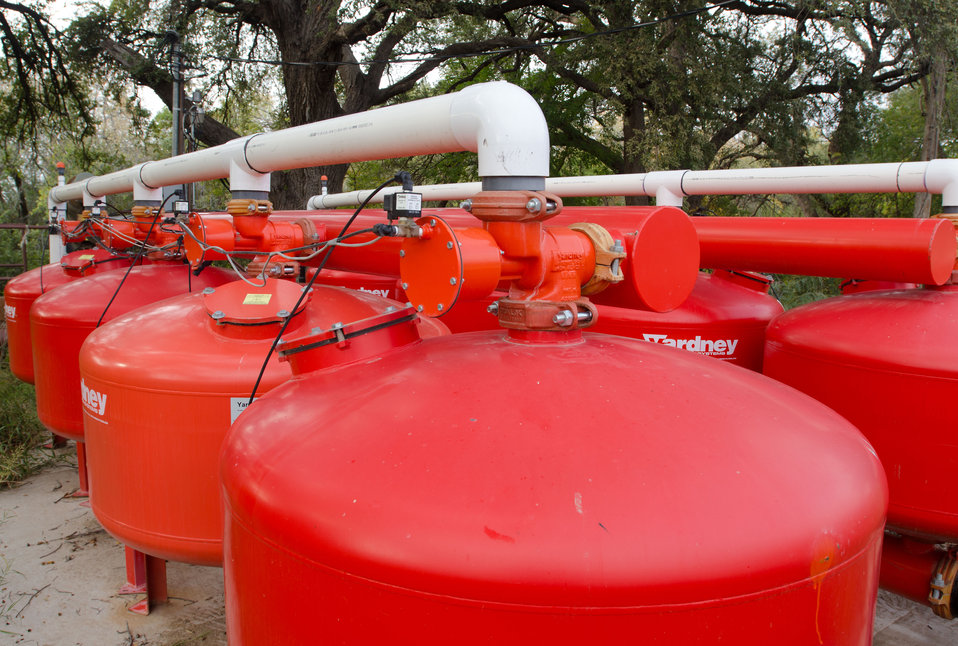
Sand filtration tanks installed in 2010 at Arrowhead Farms of Crystal City, TX, on Friday, December 9, 2011, has been owned by Mr. Akram Mohammad, a pecan farmer since 2005. The 719 acre farm with 10,000 trees, features some orchards with underground micro irrigation system that feeds water to the roots of 4,380 pecan trees on 146 acres. Mr. Mohammad said, “USDA (U.S. Department of Agriculture) was essential to my business and trees surviving the recent exceptional drought. The trees were stress free thanks to underground micro-irrigation. This is essential to the future growth of Texas agriculture and good for America.” U.S. Department of Agriculture’s (USDA) Environmental Quality Initiative Program (EQIP) awarded Mr. Mohammad a $130,000 grant in 2008. He provided $26,000 for the balance of the $156,000 total cost to install a 146-acre underground micro-irrigation for 4,380 trees.